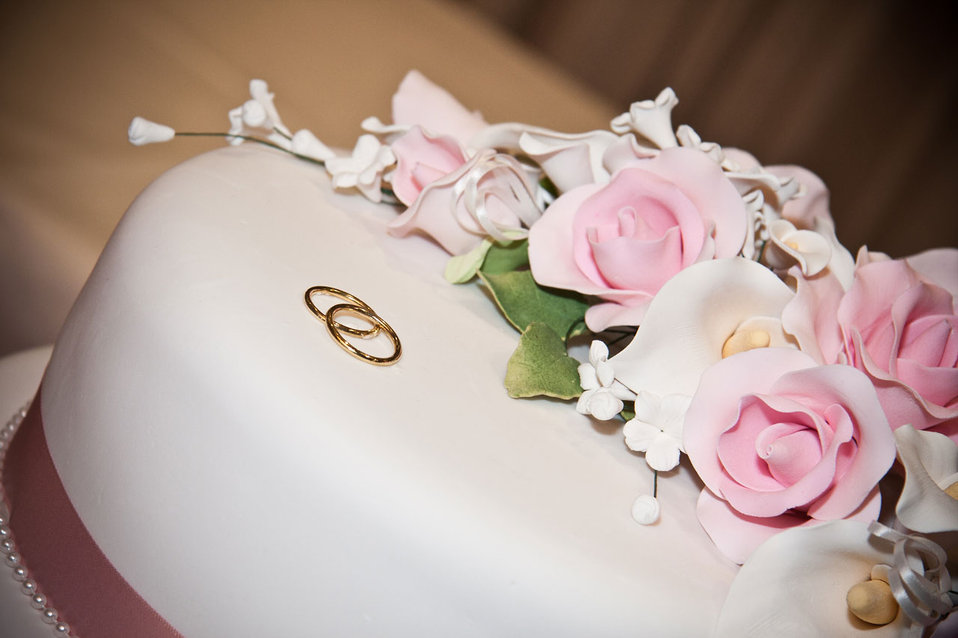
Wedding cake

The top of a wedding cake.